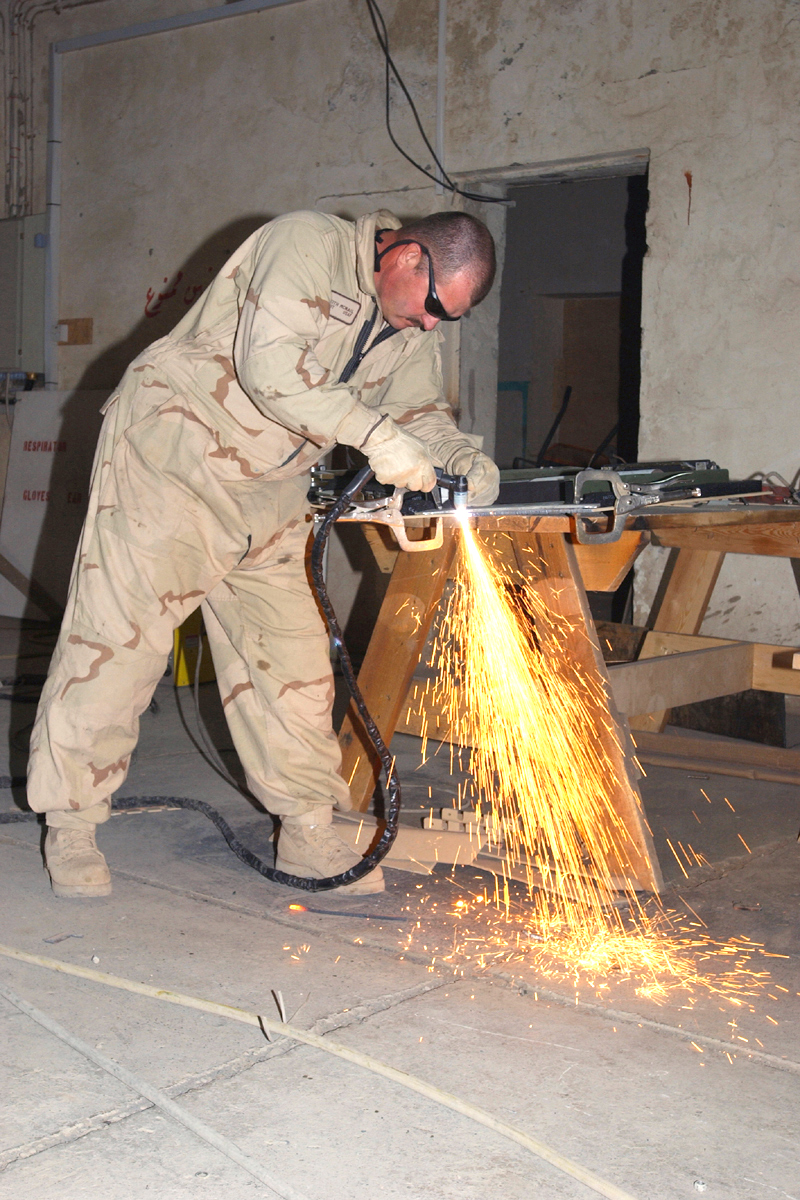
Armoring up

KIRKUK AIR BASE, Iraq -- Master Sgt. Keith McNail cuts protective armor that will fit in the right rear door of a Humvee here. Sergeant McNail is part of a U.S. Central Command Air Forces "up armor" team sent to Iraq to install protective armor on Humvees for the 506th Expeditionary Security Forces Squadron here. He is assigned to the 506th Expeditionary Logistics Readiness Squadron.